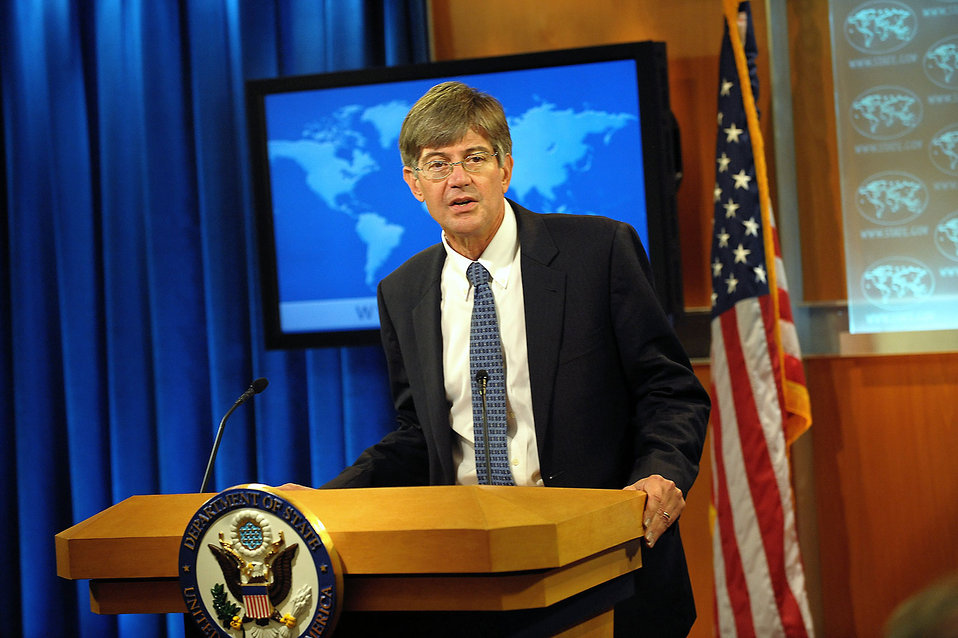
Deputy Secretary Steinberg Briefs the Press on New Iran Sanctions

U.S. Deputy Secretary of State James B. Steinberg briefs the press on the new determinations pursuant to the Comprehensive Iran Sanctions, Accountability, and Divestment Act of 2010 at the U.S. Department of State in Washington, D.C., on September 30, 2010.